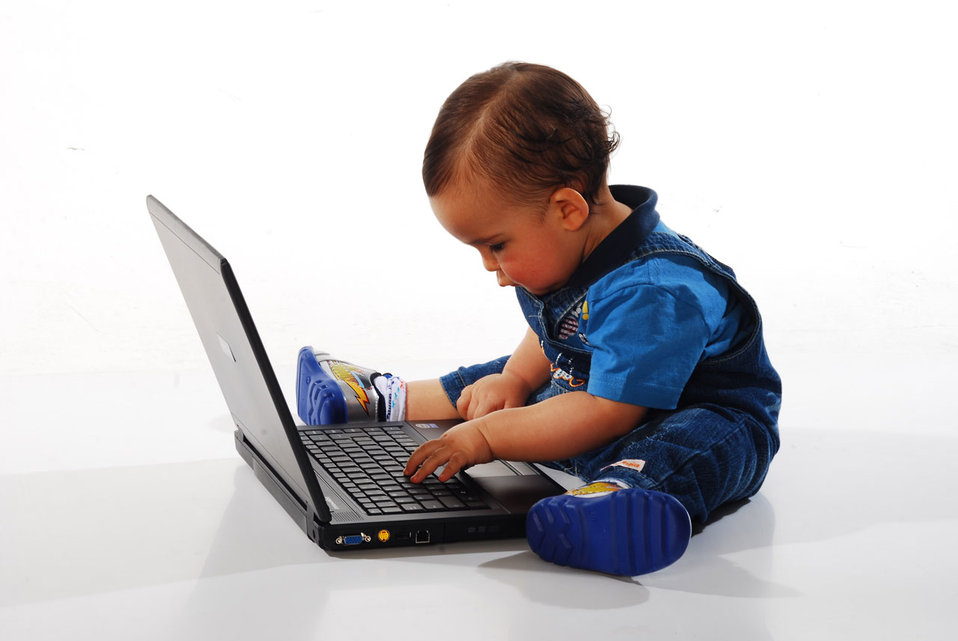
Child with laptop

Child working at early age.